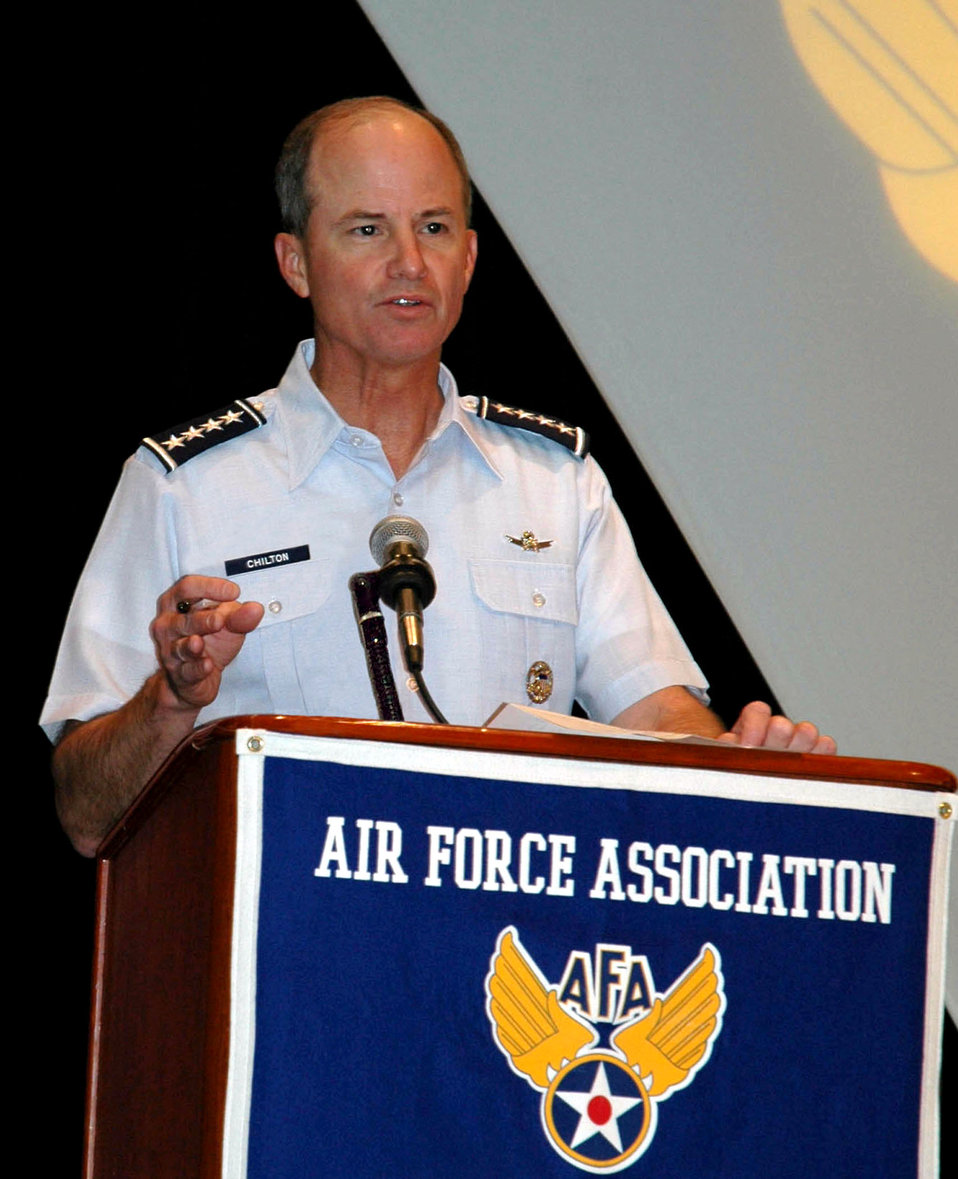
General Chilton speaks at AFA

Gen. Kevin P. Chilton, commander of Air Force Space Command, speaks at the Air Force Association's Space Warfare Symposium in Keystone, Colo., June 19.